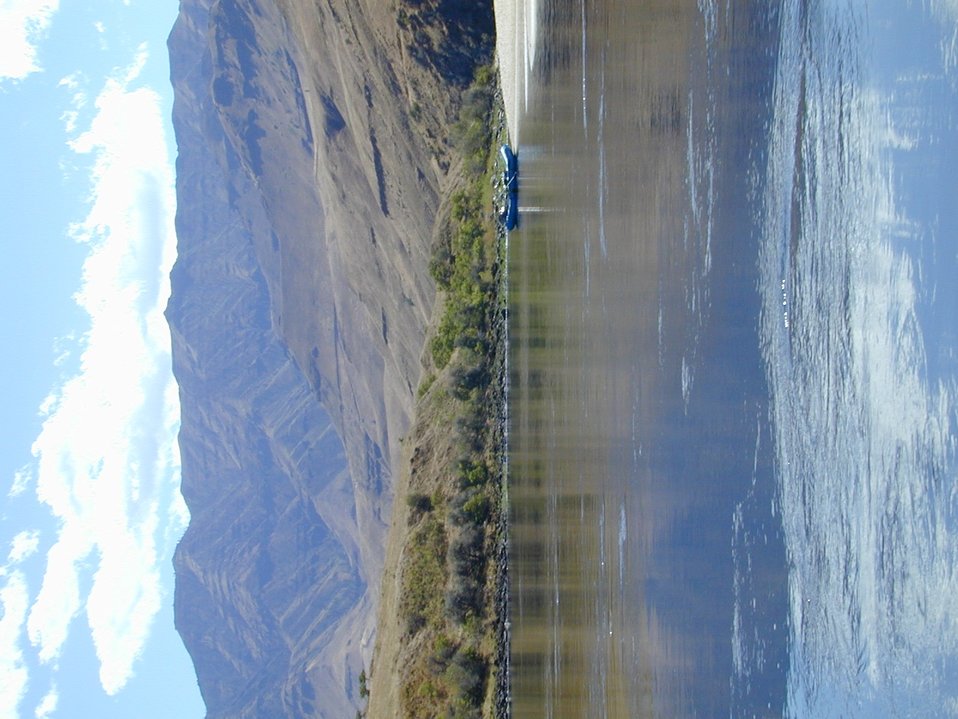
Scenic shot of Lower Salmon River Cottonwood Field Office UCSC Upper Columbia Salmon Clearwater District